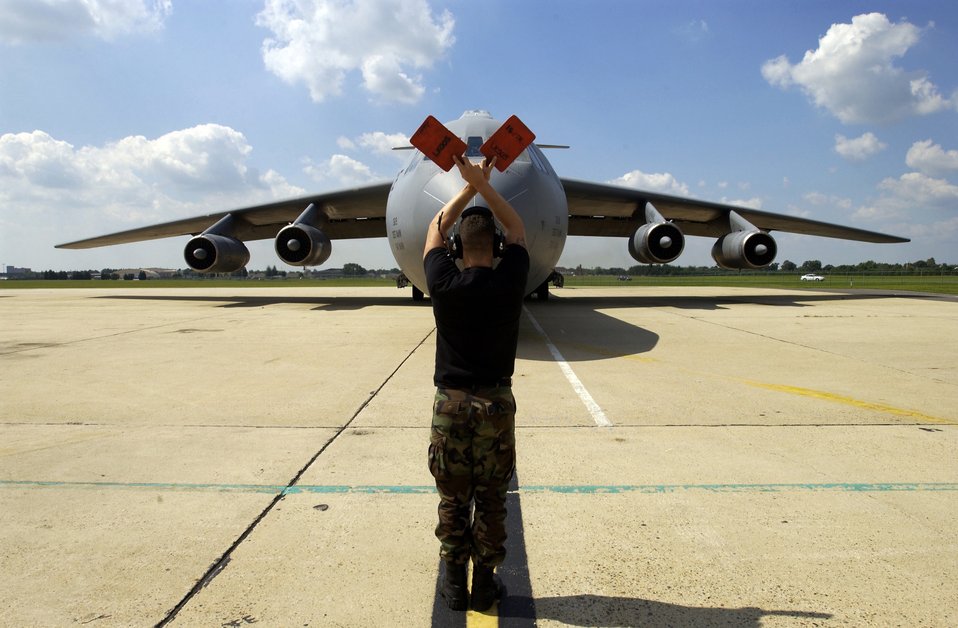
When it's over

MCGUIRE AIR FORCE BASE, N.J. -- Staff Sgt. Eric Bayless marshals in a C-141B Starlifter from its final flight here Sept. 1. The C-141B Starlifter is being retired from the active- duty Air Force inventory on Sept. 16. After 40 years of service and nearly nine million flying hours, the aircraft has a proven reliability and long-range capability in worldwide airlift for combat support missions, and to humanitarian relief.